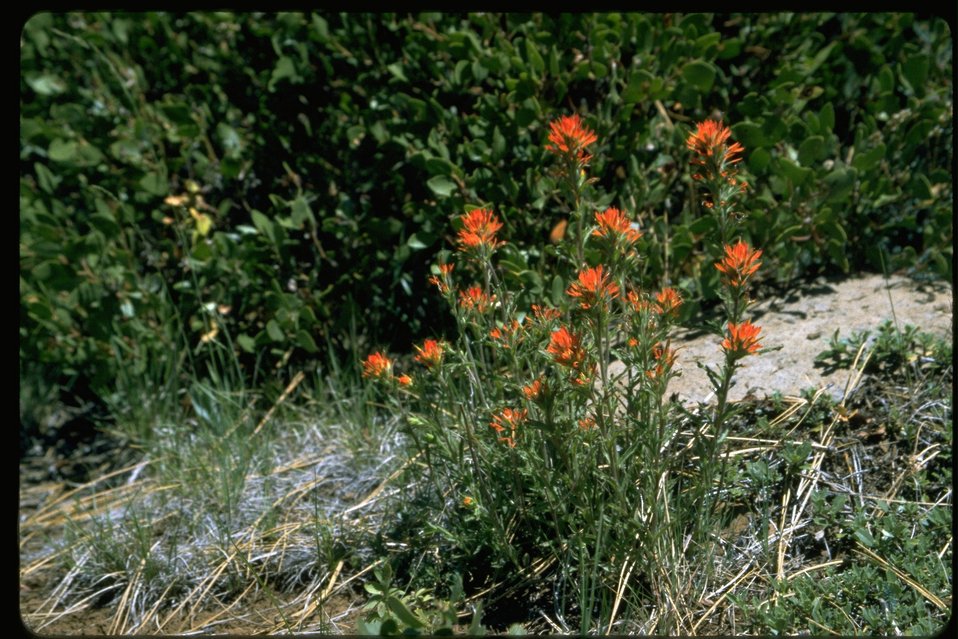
Medium long shot of Indian Paintbrush wildflowers.